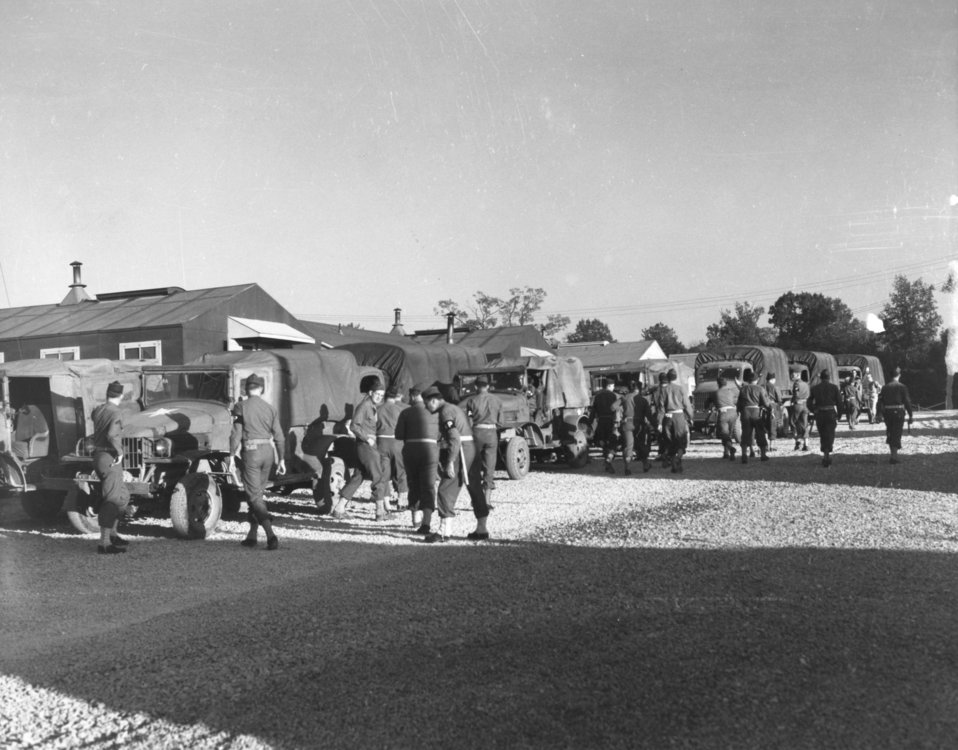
Army Activity at Oak Ridge